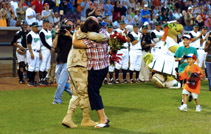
Deployed member, family enjoy surprise reunion

In a surprise reunion, Kim Thigpen embraces her husband, Capt. Jim Thigpen, as their sons, Jacob and Caleb run across Fifth Third Field in Dayton, Ohio. The captain is a member of Aeronautical Systems Center's 726th Aeronautical Systems Group at Wright-Patterson Air Force Base, Ohio, which manages the B-2 Spirit.